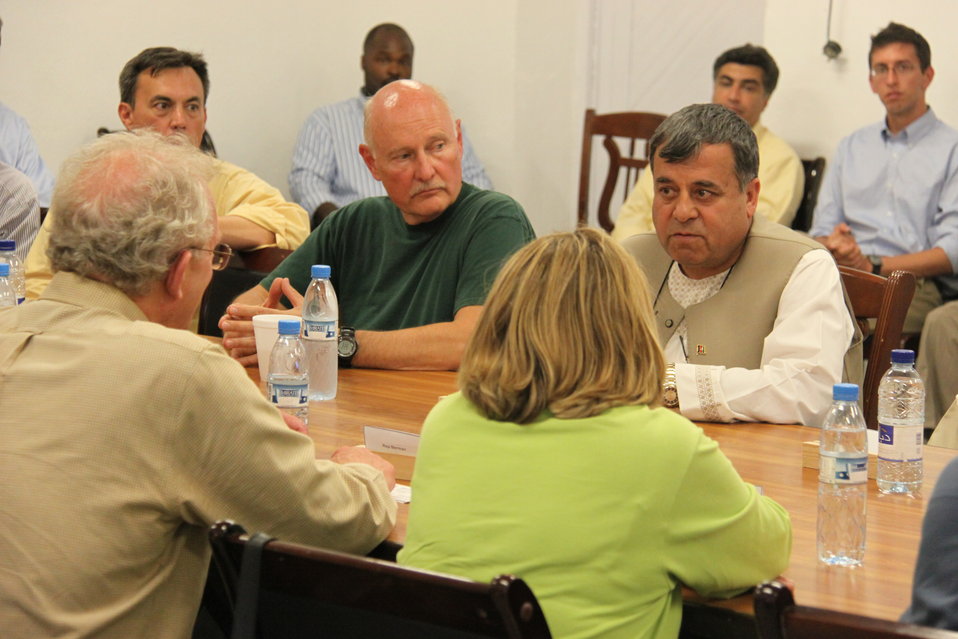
Meeting with Local Leaders in Kandahar